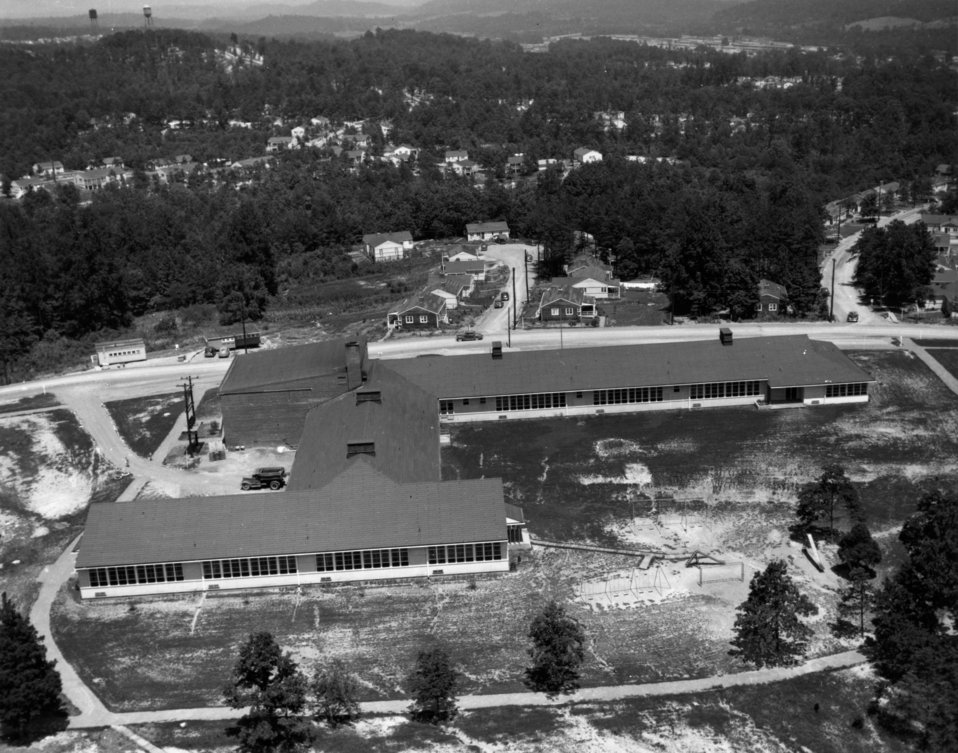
Schools at Oak Ridge